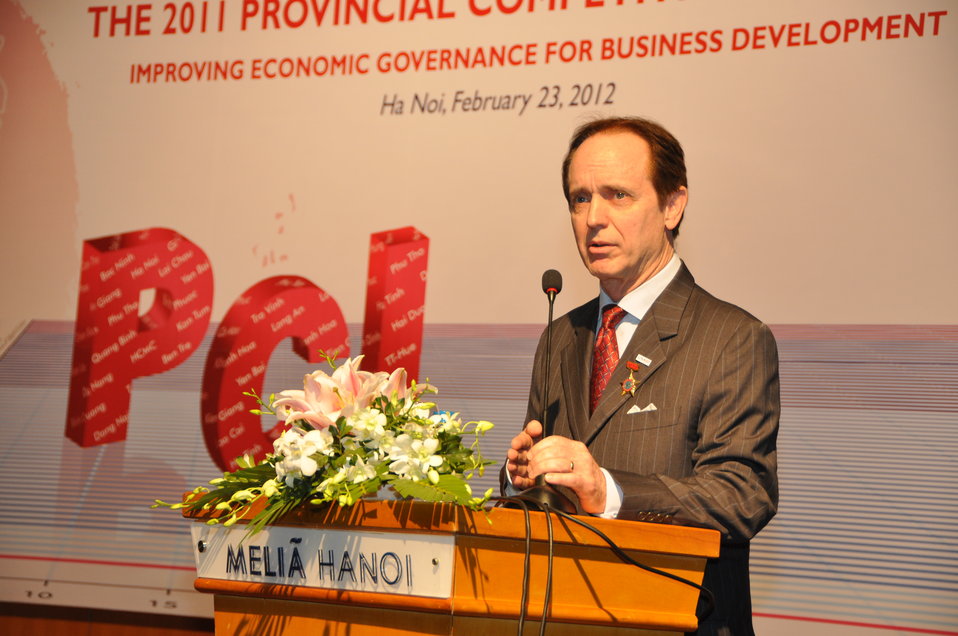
USAID Mission Director Francis Donovan at the Provincial Competitiveness Index 2011 Launch